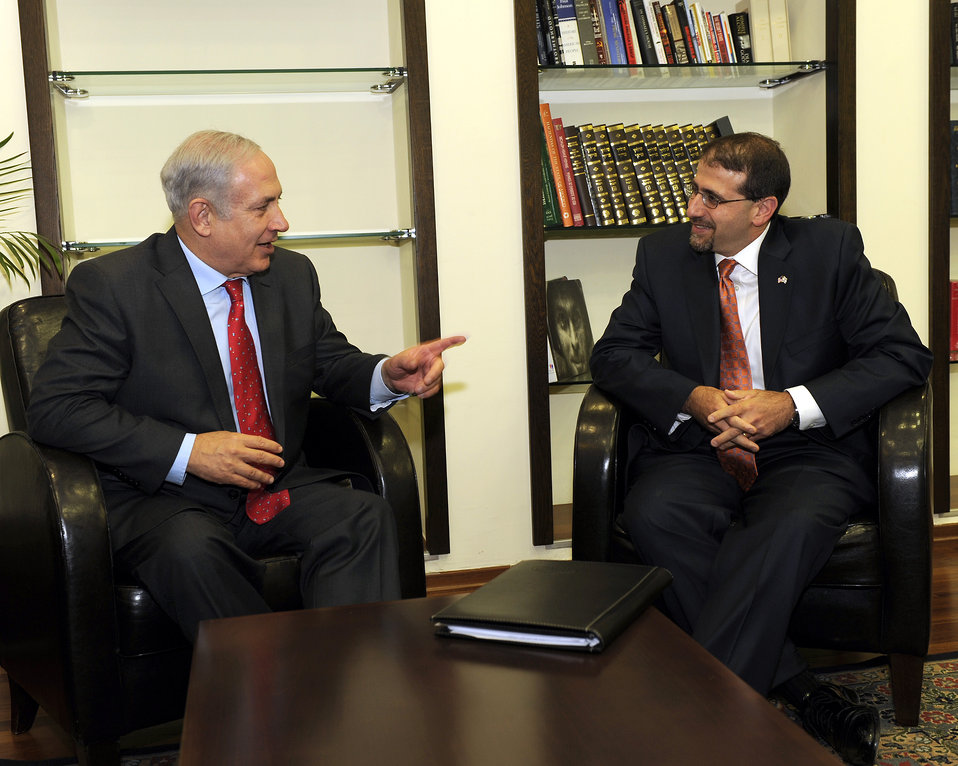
Ambassador Shapiro Meets With Israeli Prime Minister Netanyahu

U.S. Ambassador to Israel Daniel Shapiro meets with Israeli Prime Minister Benjamin Netanyahu at the Prime Minister's office in Tel Aviv, Israel, on August 4, 2011.